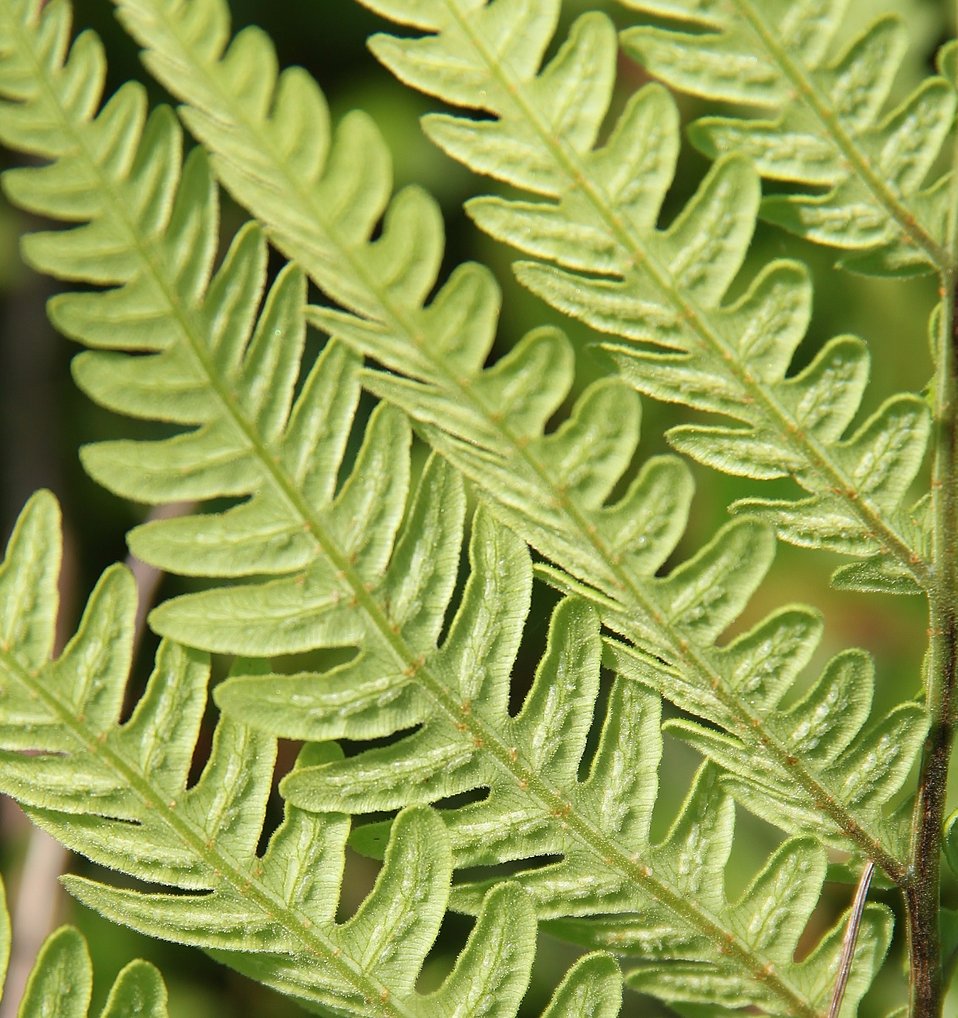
Virginia Chain Fern

Photographed at Missisquoi National Wildlife Refuge.